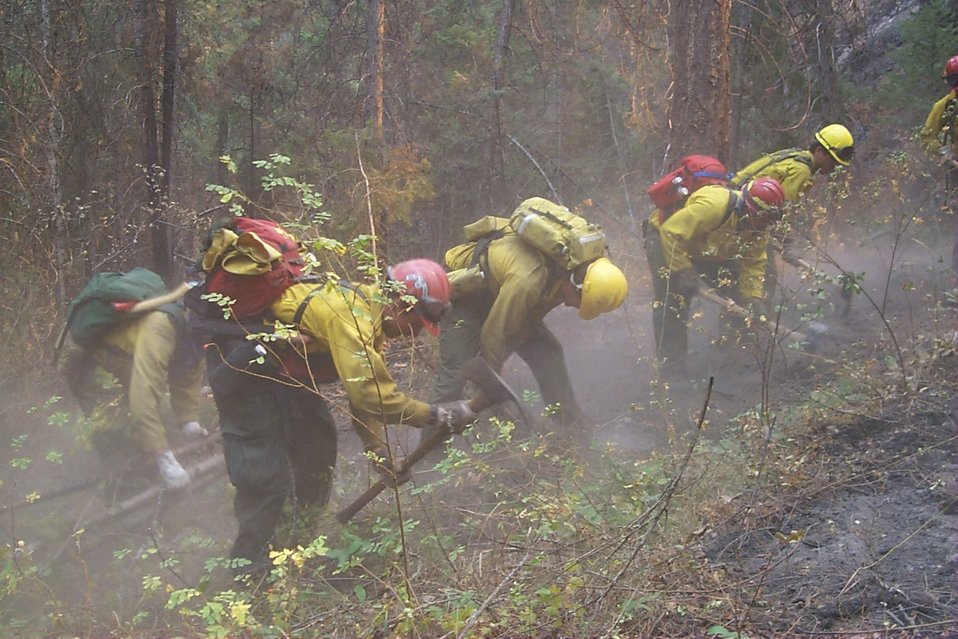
Line crew Fire Clearwater Fire Salmon Field Office USRD Upper Snake River District